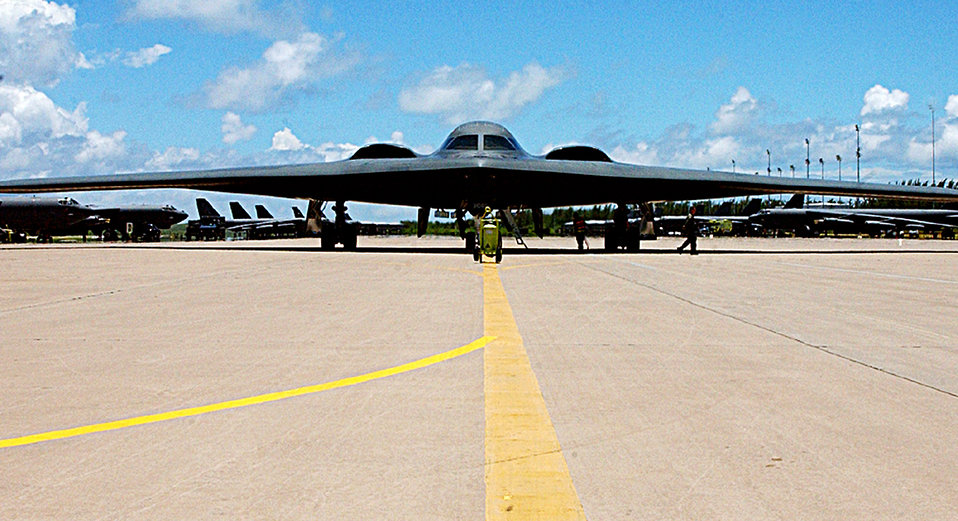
B-2 Spirit at rest

OPERATION IRAQI FREEDOM -- A B-2 Spirit is parked at a forward-deployed location in Southwest Asia. The B-2 can carry 40,000 pounds of munitions.